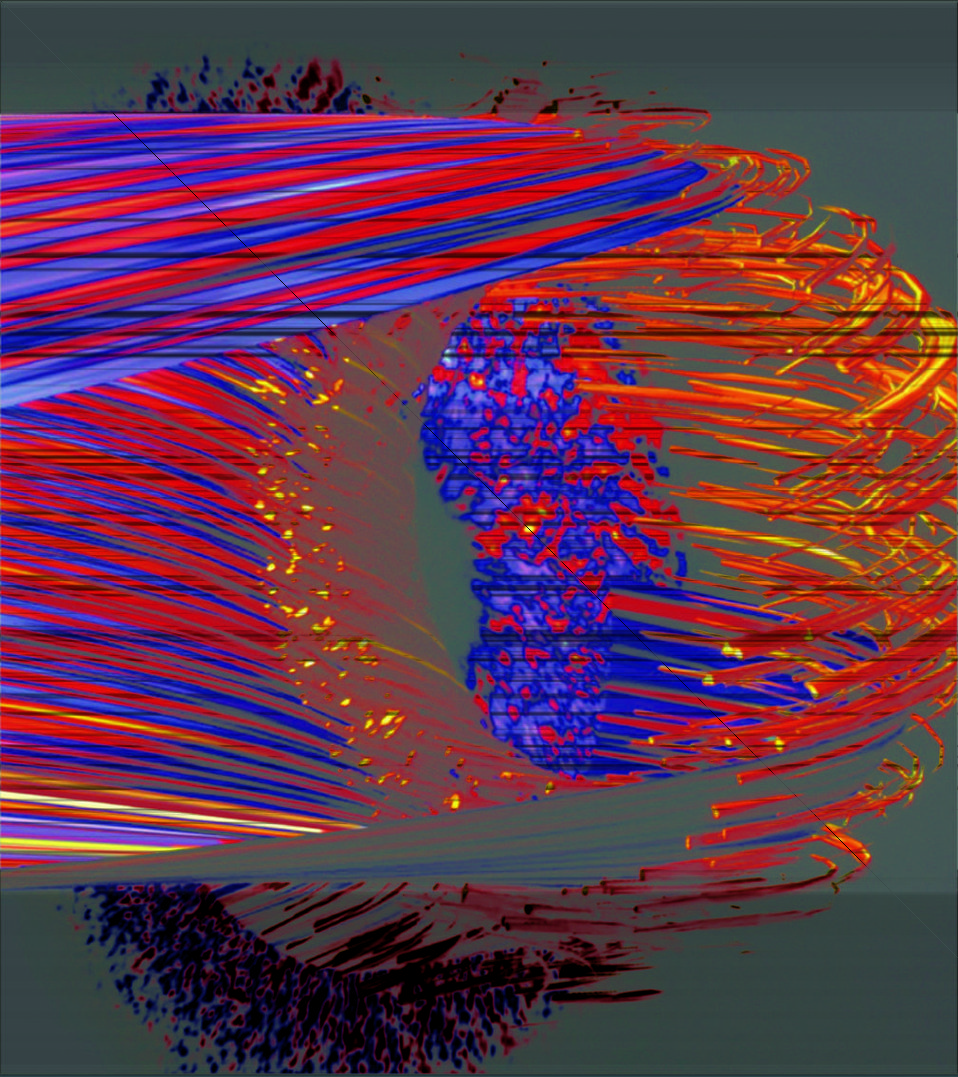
A global particle-in-cell simulation uses Weixing Wang's GTS code to show core turbulence in a Tokamak at Argonne National Laboratory.
Researchers are the Argonne Leadership Computing Facility to push fusion computer codes and associated algorithms closer to defining plasma confinement properties required to ignite the ITER experimental fusion reactor. The achievement is an important step toward developing a commercially viable, clean, limitless energy source. Image created by Scott Klasky, ORNL.